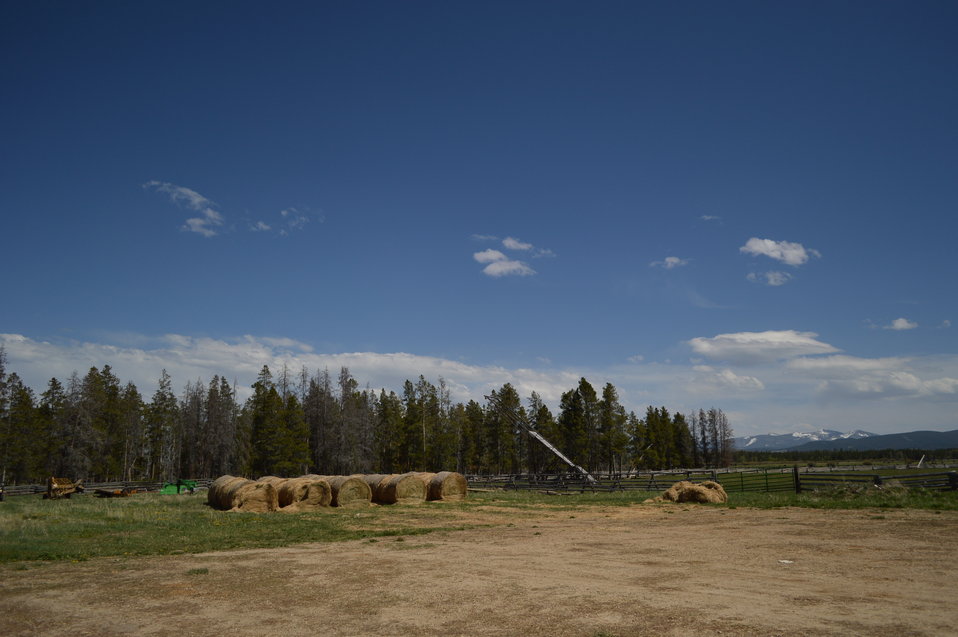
Regional Leadership Visit to Montana 2014